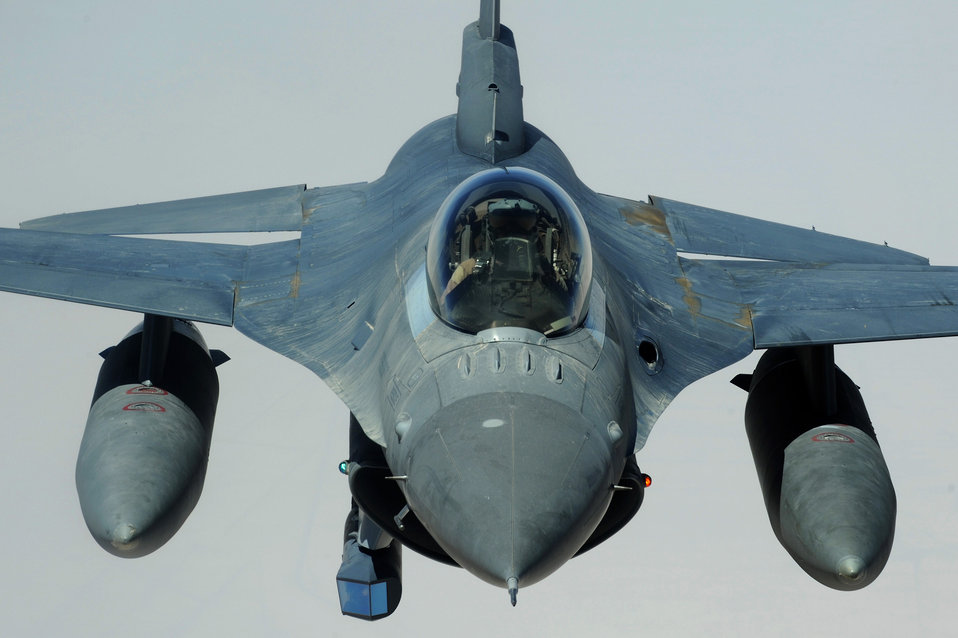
Refueling operations over Iraq

An F-16CJ Fighting Falcon approaches a KC-135 Stratotanker for refueling over Iraq in support of Operation Iraqi Freedom.